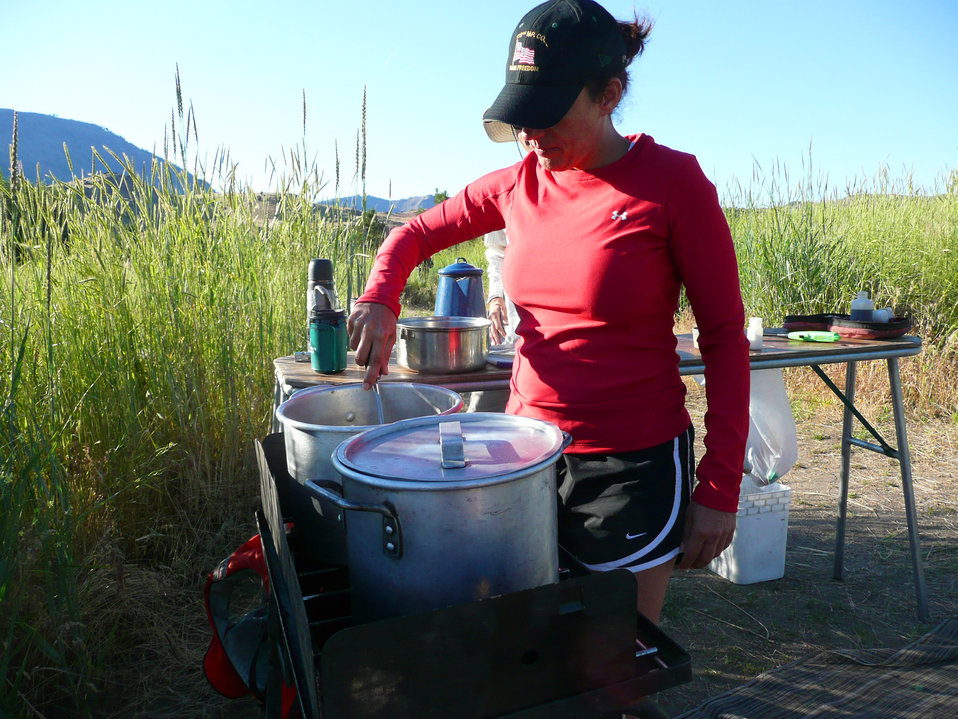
Veterans Outward Bound expedition

Staff Sgt. Stephanie J. Riotte prepares the evening meal for a team of nine veterans who chose to attend the white water rafting course June 6 through 10, 2010, on the Lower Deschutes River, Ore.